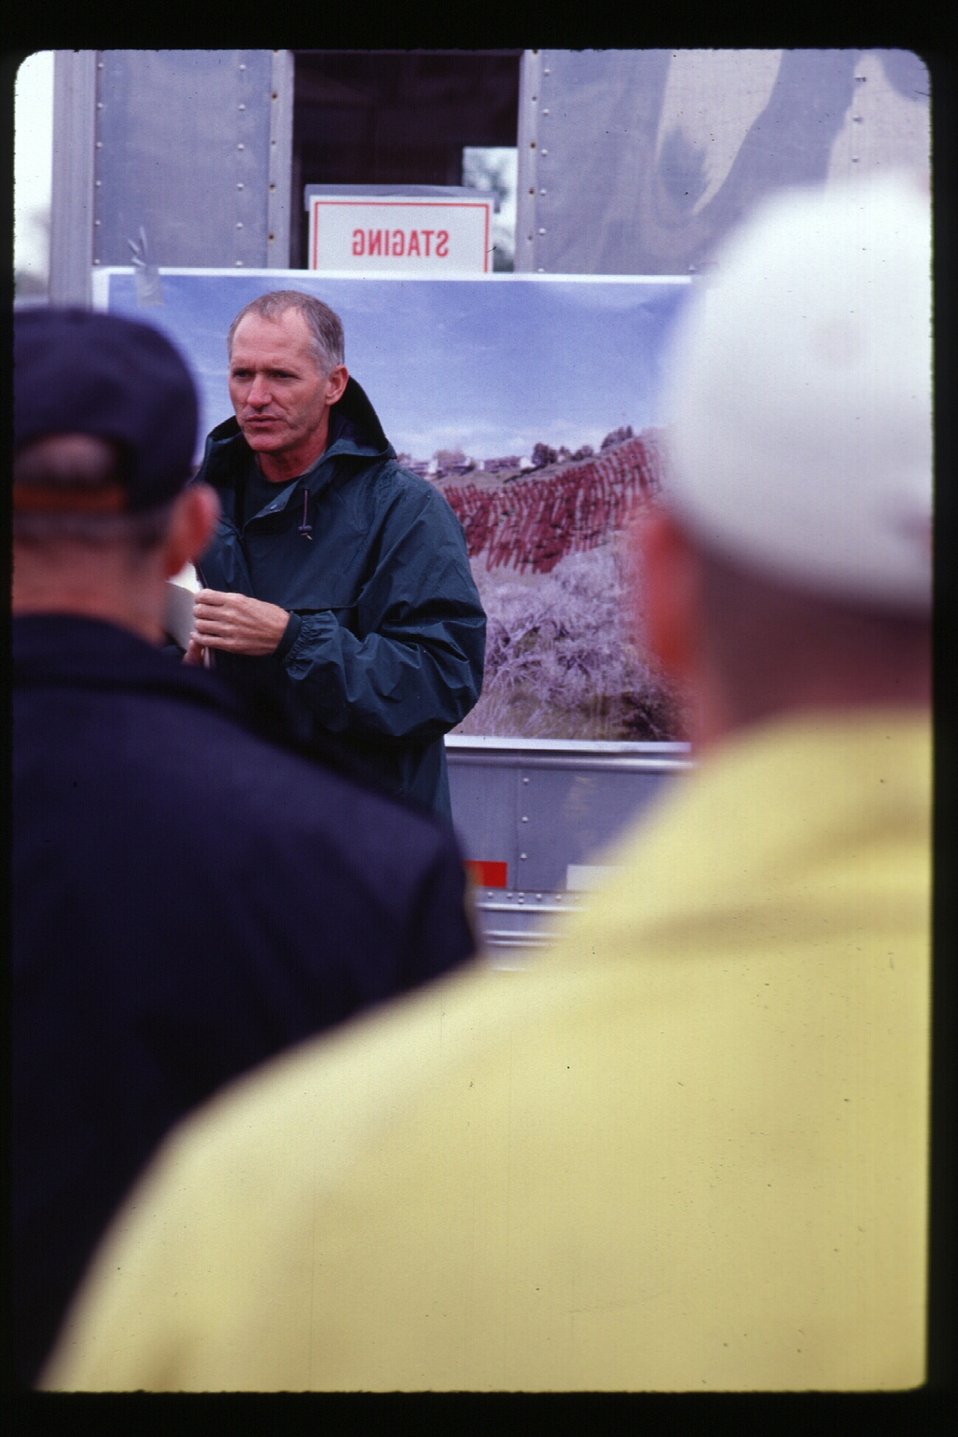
Fire fighter training Four Rivers Field Office LSRD Lower Snake River District